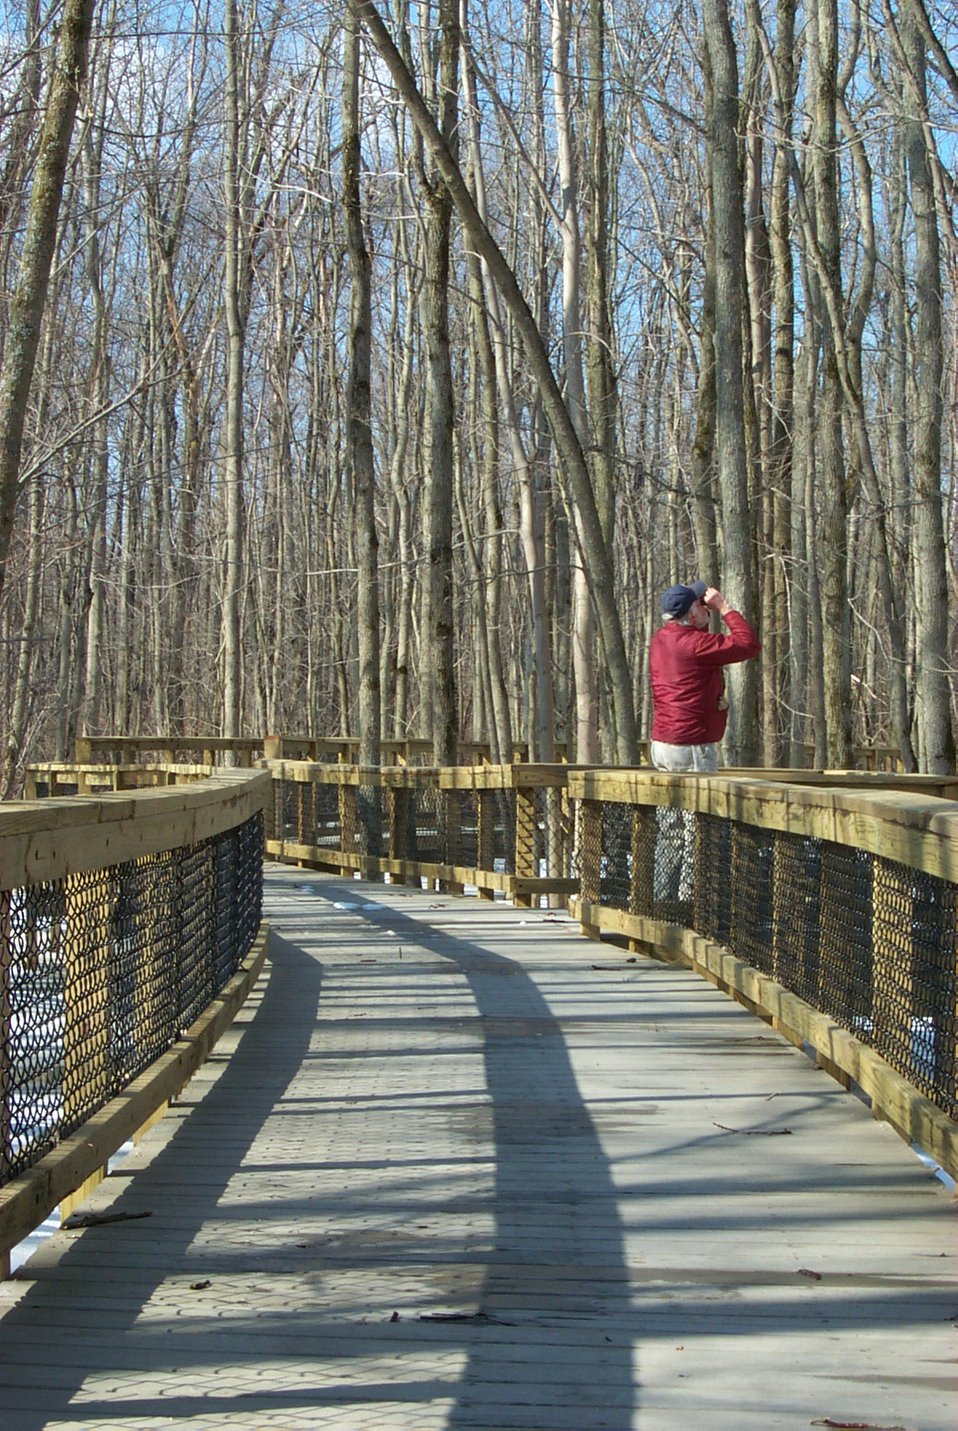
Bird watcher

Bird watching is a popular activity on Swallow Hollow Nature Trail at Iroquois National Wildlife Refuge in New York.